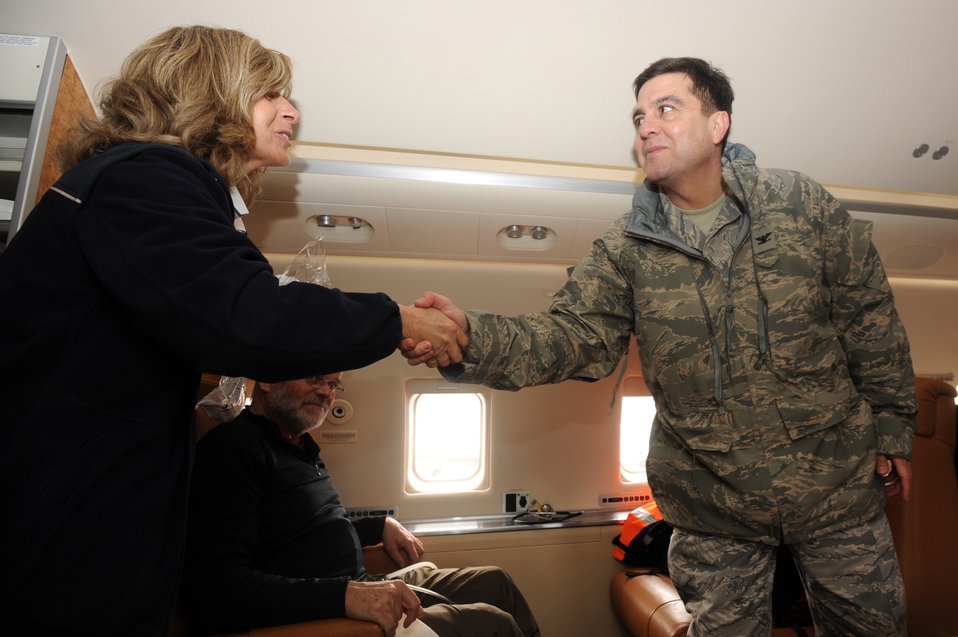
Transporting precious cargo worldwide

MISAWA AIR BASE, Japan -- Col. Guillermo Tellez, 35th Medical Group commander, says goodbye to Mr. Maurer Bruno, Swiss Search and Rescue and Nurse Karin Stegemann, prior to the medical evacuation Mar. 21. Bruno was helping out for ten days with the recovery efforts in northern Japan prior to his emergency surgery at the Hachinohe Medical Center.